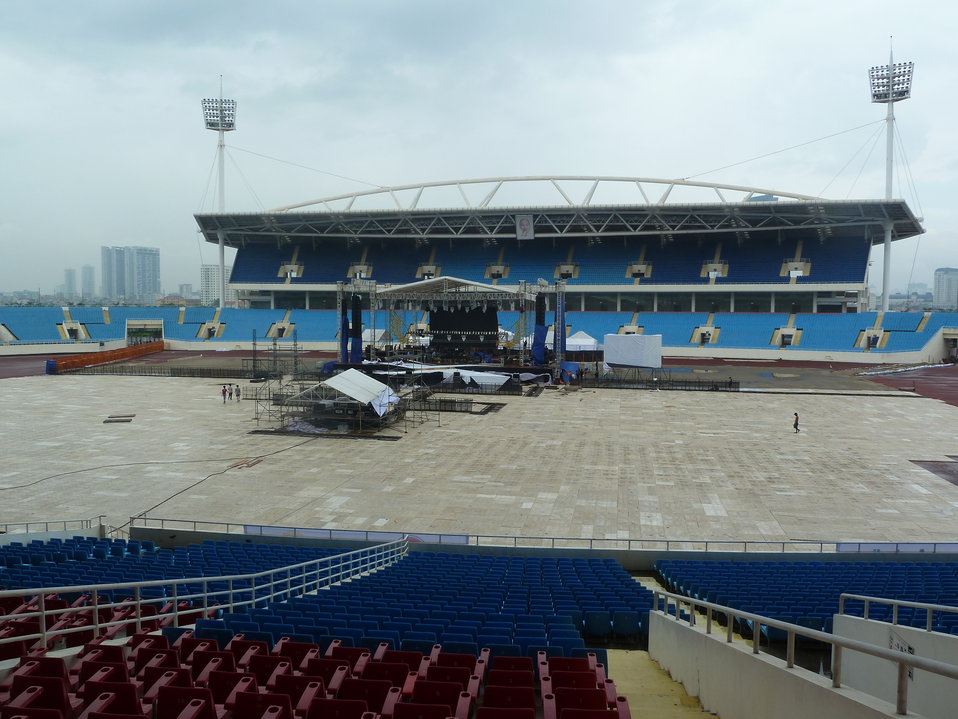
Preparations under way for big MTV EXIT concert in Hanoi on May 26, 2012

Co-sponsored by USAID.